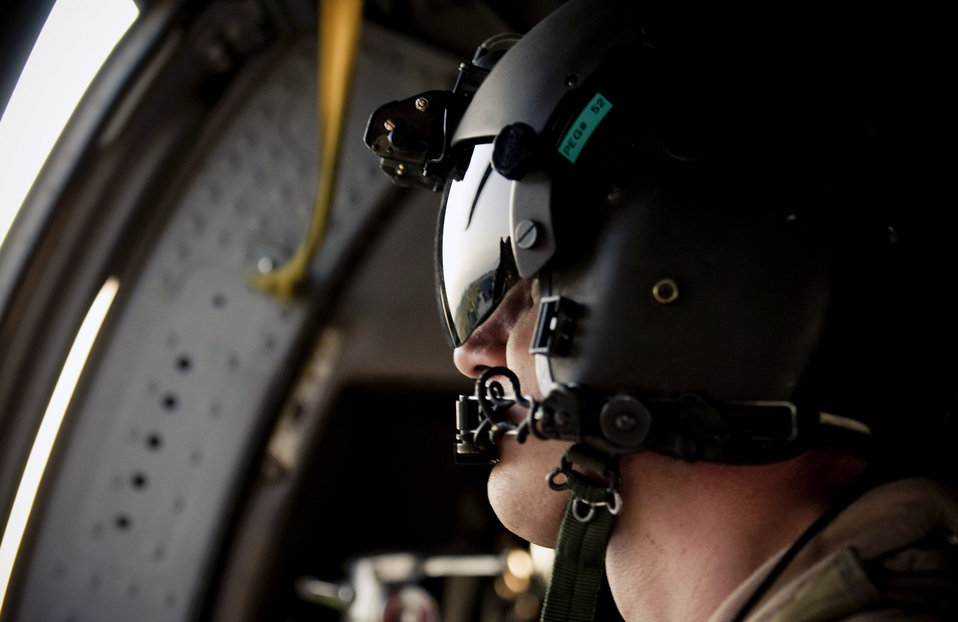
Flying with the Pave Hawks

Senior Airman Ryan Ballinger, a 33rd Expeditionary Rescue Squadron gunner, looks out at Bagram Air Base, Afghanistan, Aug. 2 from his HH-60G Pave Hawk helicopter. As an aerial gunner, Airman Ballinger is tasked with operating a 50-caliber machinegun and keeping a wary eye for enemy movement. He is deployed from the 33rd Rescue Squadron, Kadena AB, Japan.